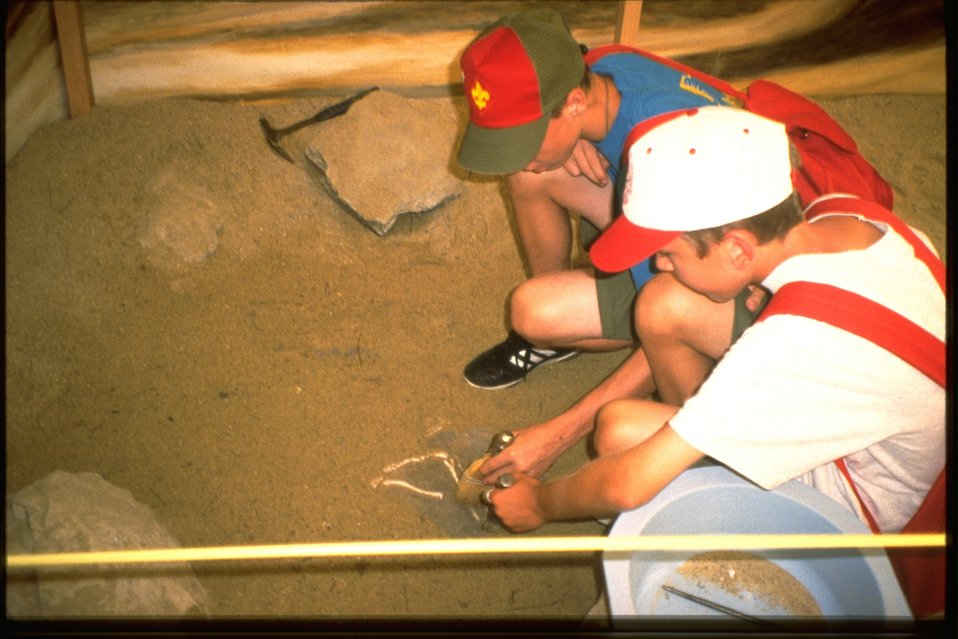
Boy Scouts National Jamboree: BLM paleo exhibit.